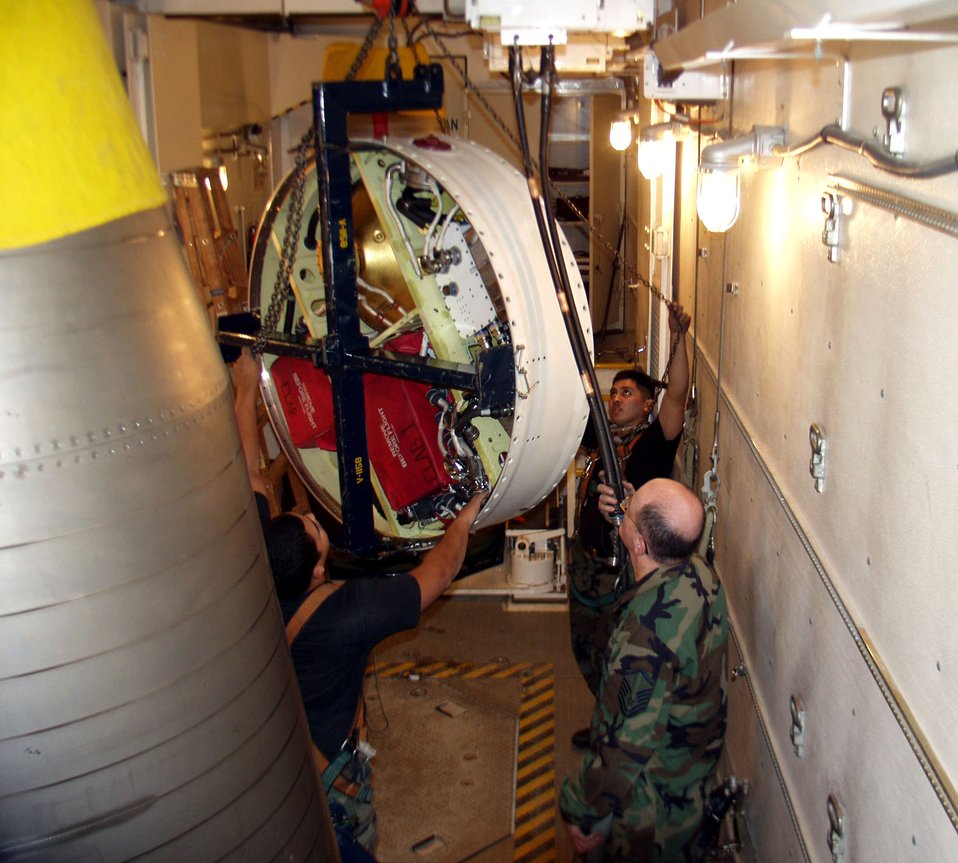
Malmstrom Airmen replace missile guidance systems

Master Sgt. Maxwell Jackson, Staff Sgt. Preston Yockeman and Senior Airman David Burress perform missile guidance system tilt procedures to maneuver the MGS to the rear of the two re-entry systems in the payload transporter van on site Dec. 4 at Malmstrom Air Force Base, Mont. Sergeant Jackson is a 341st Missile Maintenance Squadron team critical task supervisor, Sergeant Yockeman is a 341st Missile Maintenance Squadron team cageman, and Airman Burress is a 341st Missile Maintenance Squadron team top side technician.